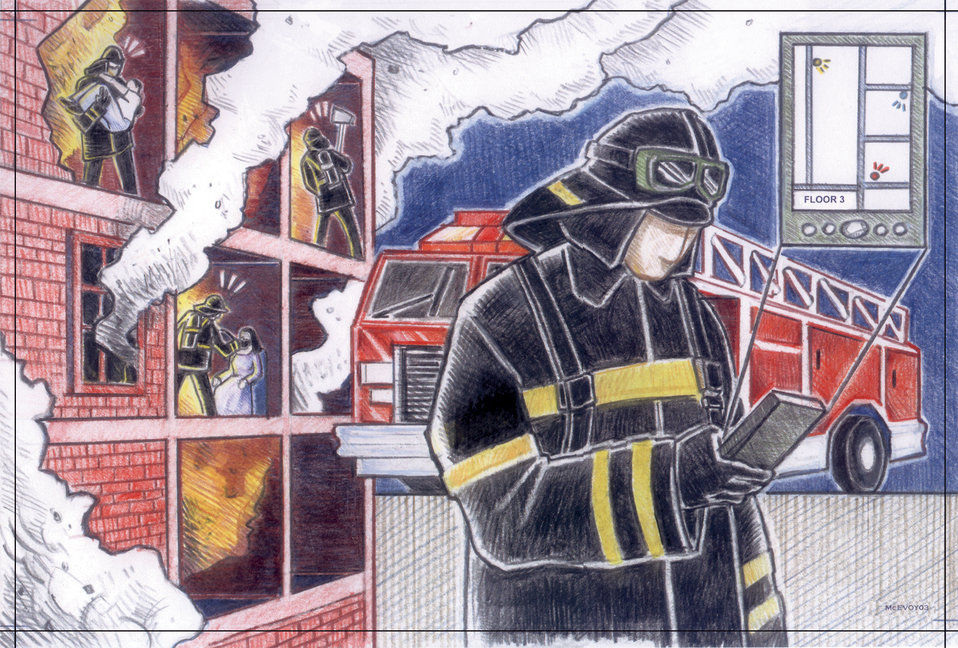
First Responders

'Intelligent' building systems may someday allow firefighters and other first responders to better respond to emergencies by providing information such as building floor plans and real-time data from motion, heat, biochemical and other sensors and video cameras.